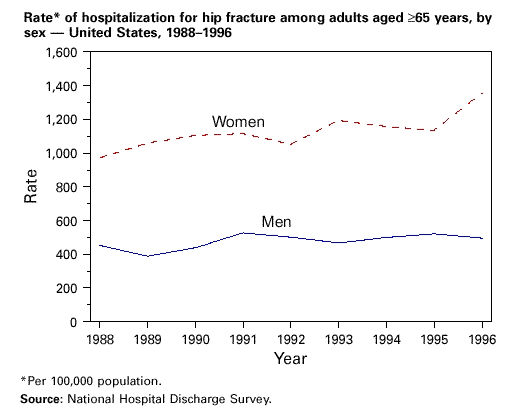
Rate of hospitalization for hip fracture among adults aged 65 years and older, by sex.